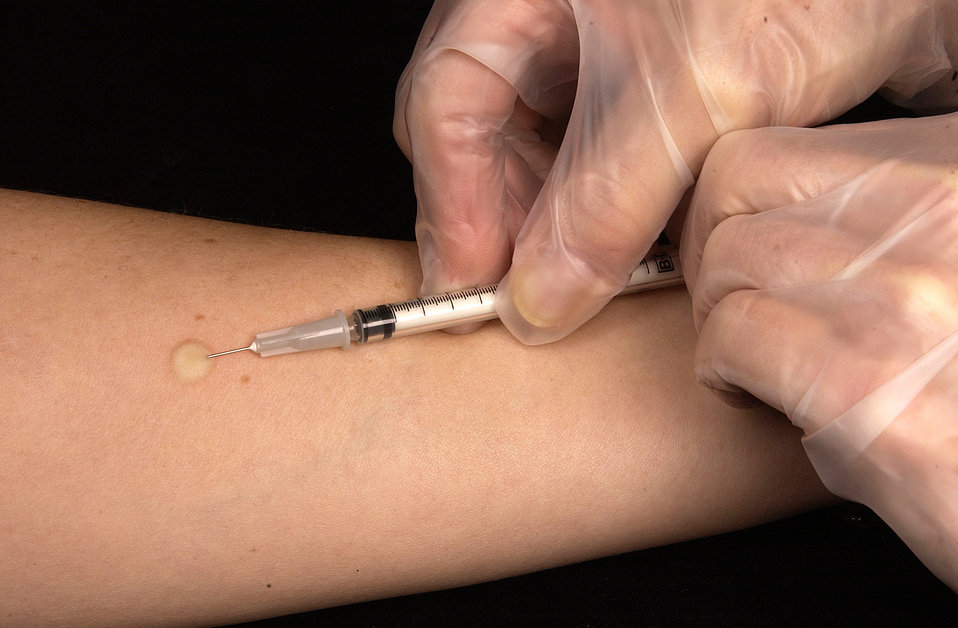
This technician is in the process of correctly placing a Mantoux tuberculin skin test in this recipient's forearm, which will cause a 6mm to10mm wheal, i.e., a raised area of skin surface, to form at the injection site.